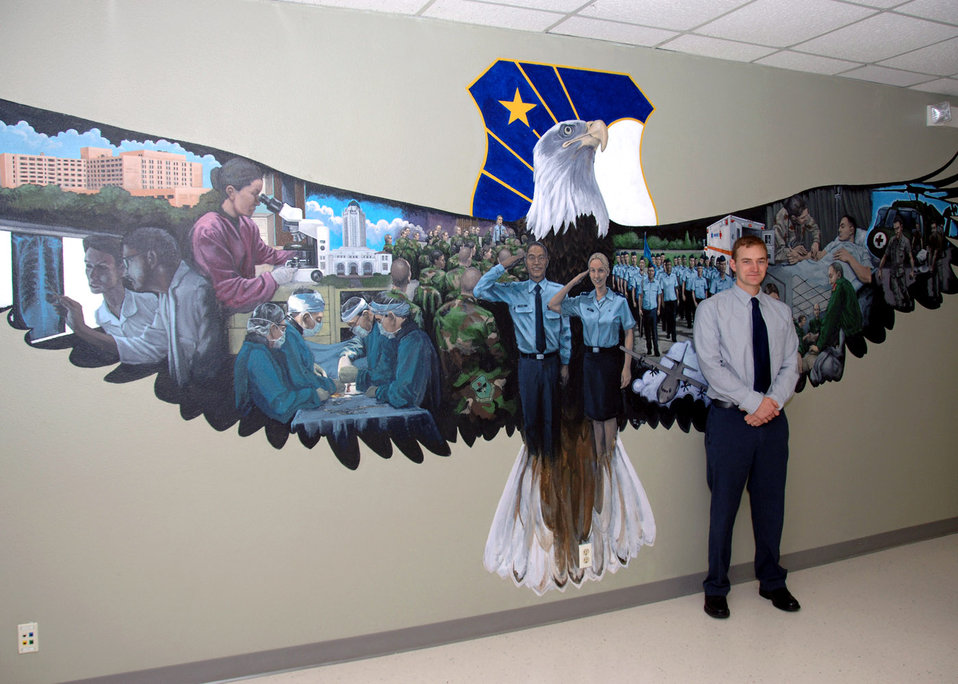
Artist honors Air Force medical field with 20-foot mural

Artist Jacob Galey, husband of Capt. Lisa Mull a psychology resident with the 59th Medical Operations Squadron, stands beside his artwork April 24 at Camp Rissington, on Lackland Air Force Base, Texas. The mural, a first for Mr. Galey, took 180 hours in more than a three-month time period.